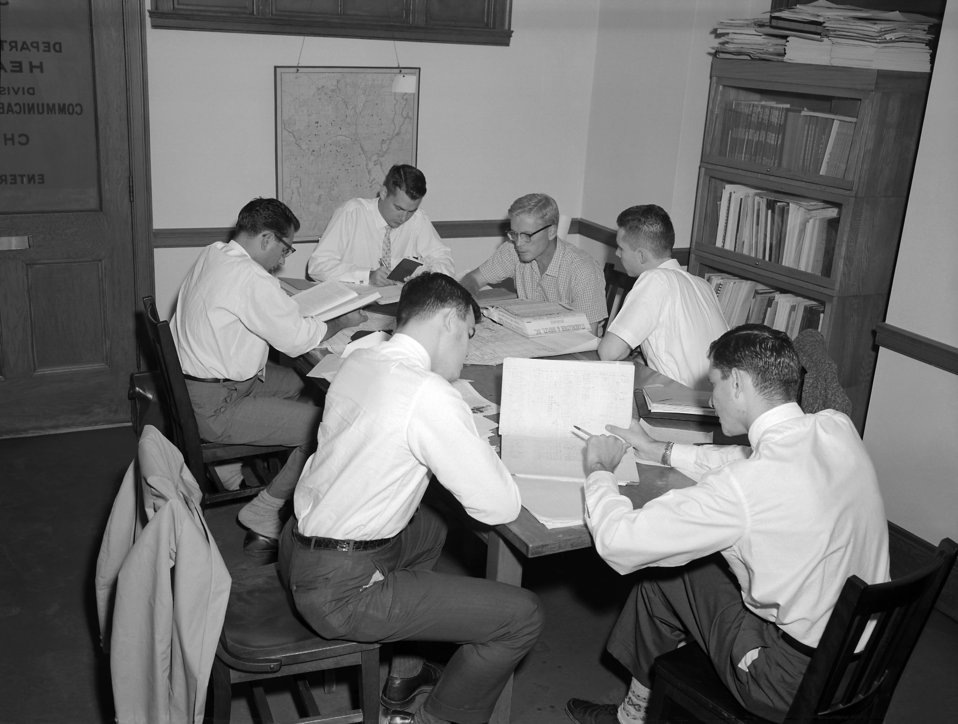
Epidemiologic field team during the Rhode Island Polio Epidemic of the 1960s.